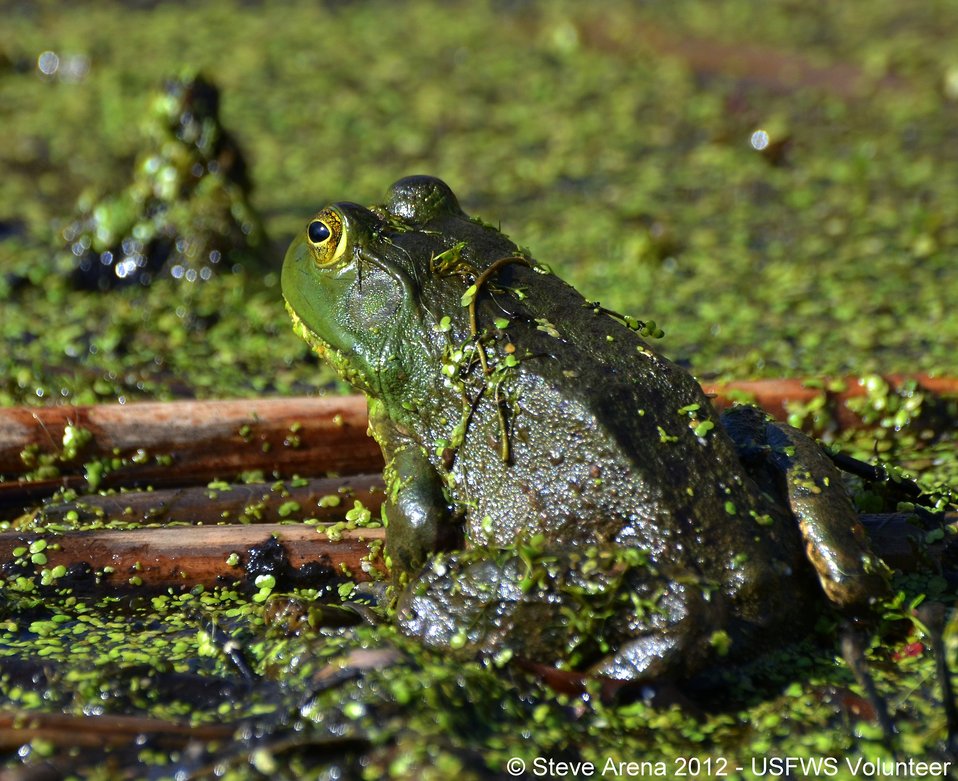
American Bullfrog (Rana catesbeiana) Upper Pool Marshbird Survey, 05 May 2012

American bullfrog at Great Meadows National Wildlife Refuge.